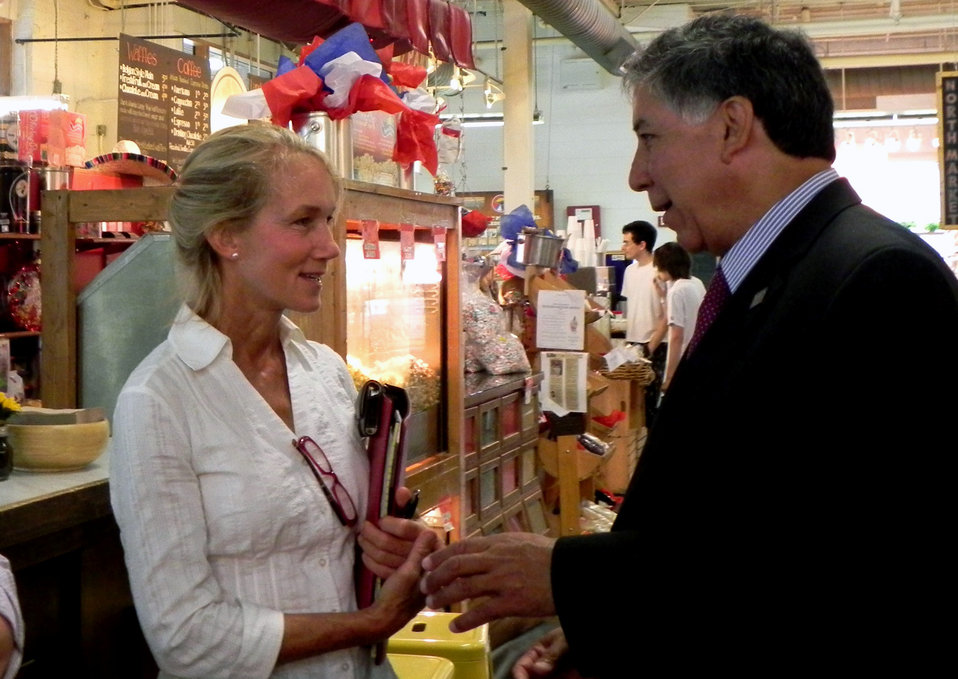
Agriculture Under Secretary for Marketing and Regulatory Programs Ed Avalos speaks with a visitor during his visit to the Ohio State Fair in Columbus, OH on Tuesday, Aug. 2, 2011. Under Secretary Avalos attended the Ohio State Fair to host a Rural Roundtable meeting with agricultural producers and rural business leaders to explore ways federal, state and local officials can work together to improve economic conditions and create jobs. This meeting is part of a series of White House Rural Roundtables that are being held across the country this summer with senior Administration officials on behalf of the White House Rural Council.